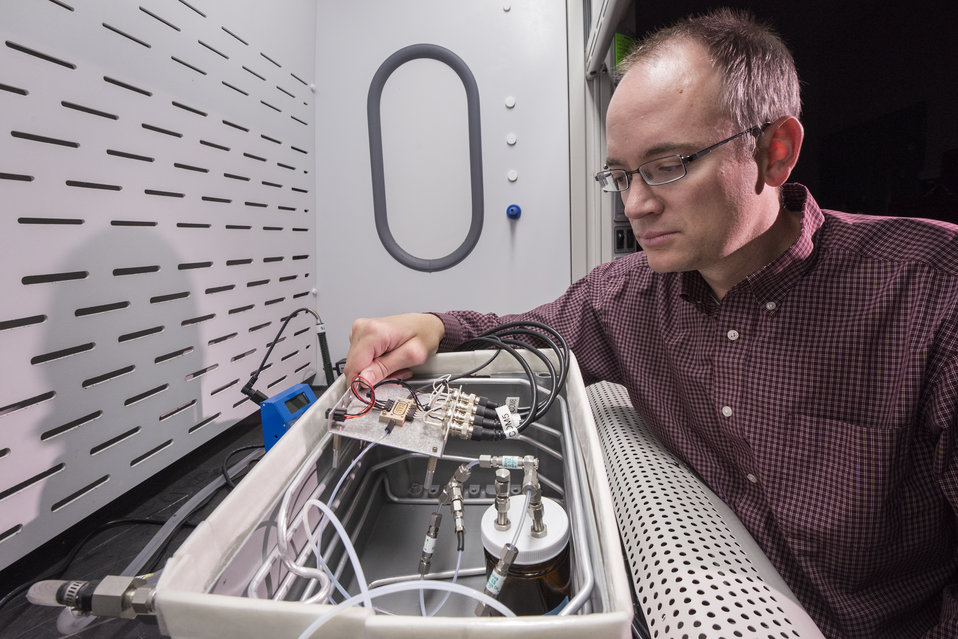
Sandia National Laboratory researchers checks tiny sensors in a test fixture, where he exposes them to different environments and measures their response to see how they perform.